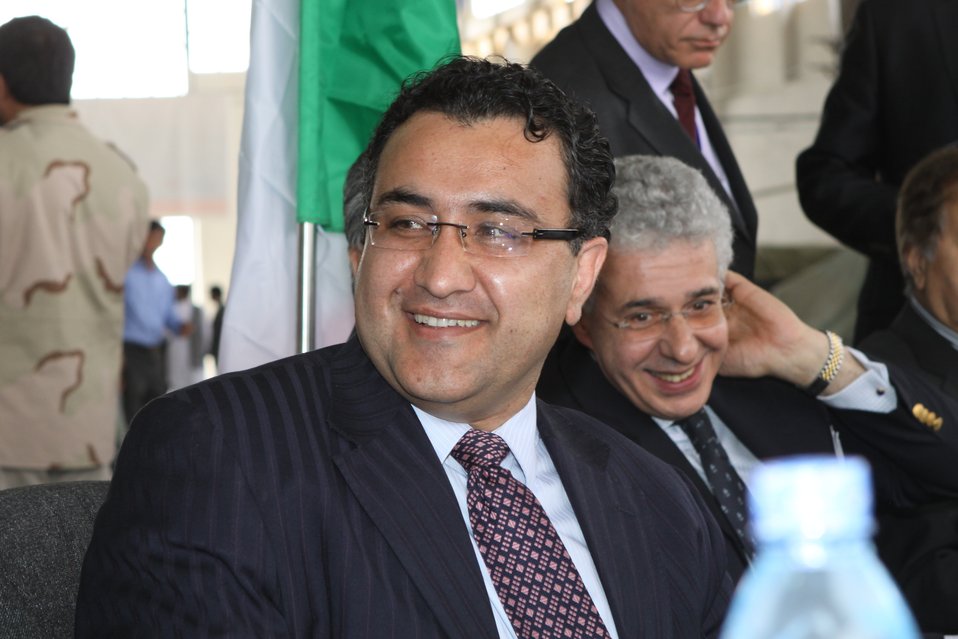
100525 Hirat Marble Conference 304